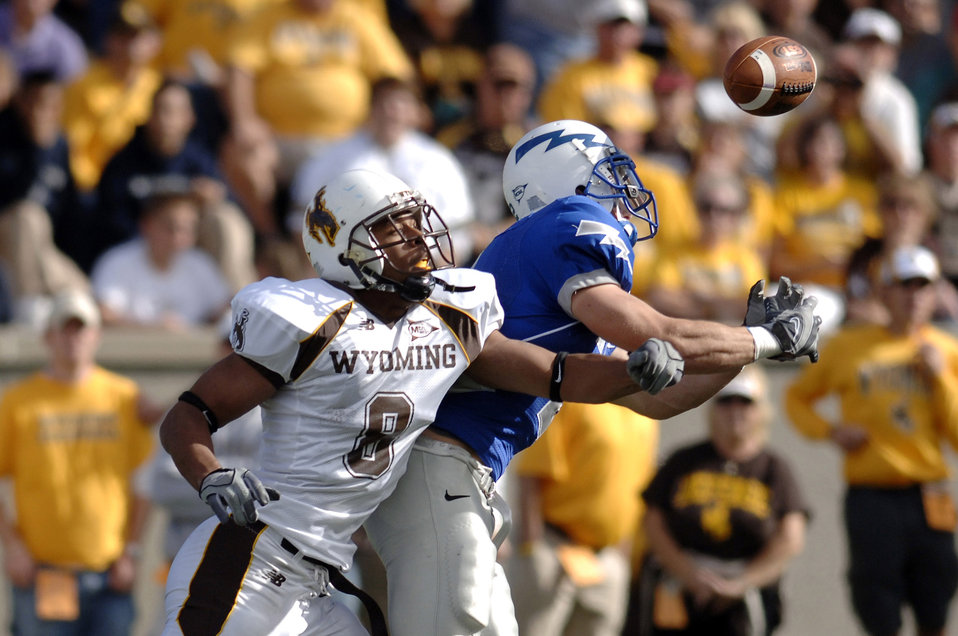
Football: Falcons bowl-eligible after win over Wyoming

U.S. Air Force Academy Falcons cornerback Carson Bird gets in front of Wyoming's Michael Ford for his sixth interception of the season during Air Force's 20-12 win Oct. 20 at Falcon Stadium in Colorado. The pick gives Bird nine takeaways, including three fumble recoveries, this season.